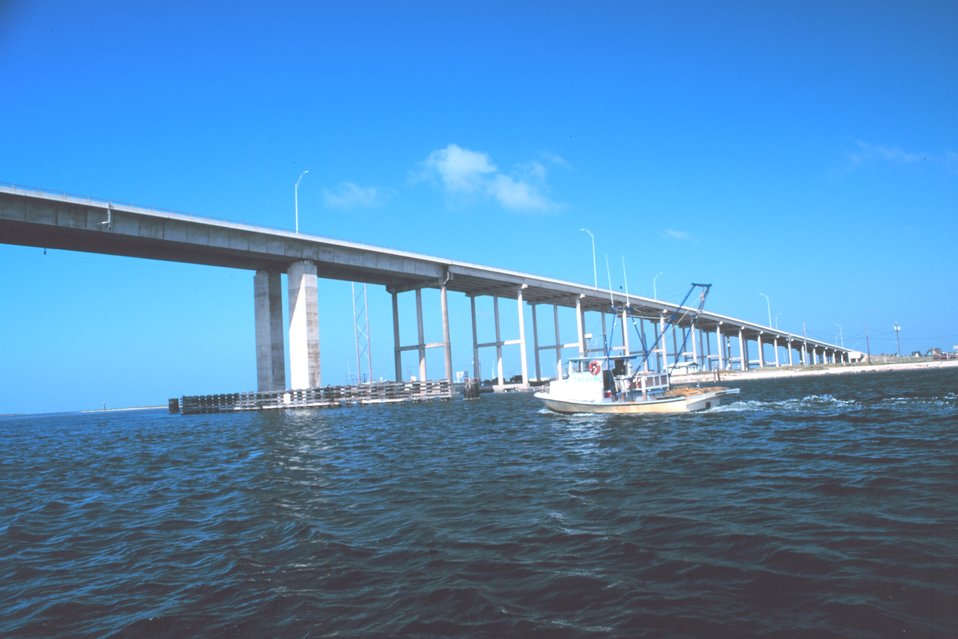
A shrimp boat headed north along the Intracoastal Waterway passing under the JFK Causeway